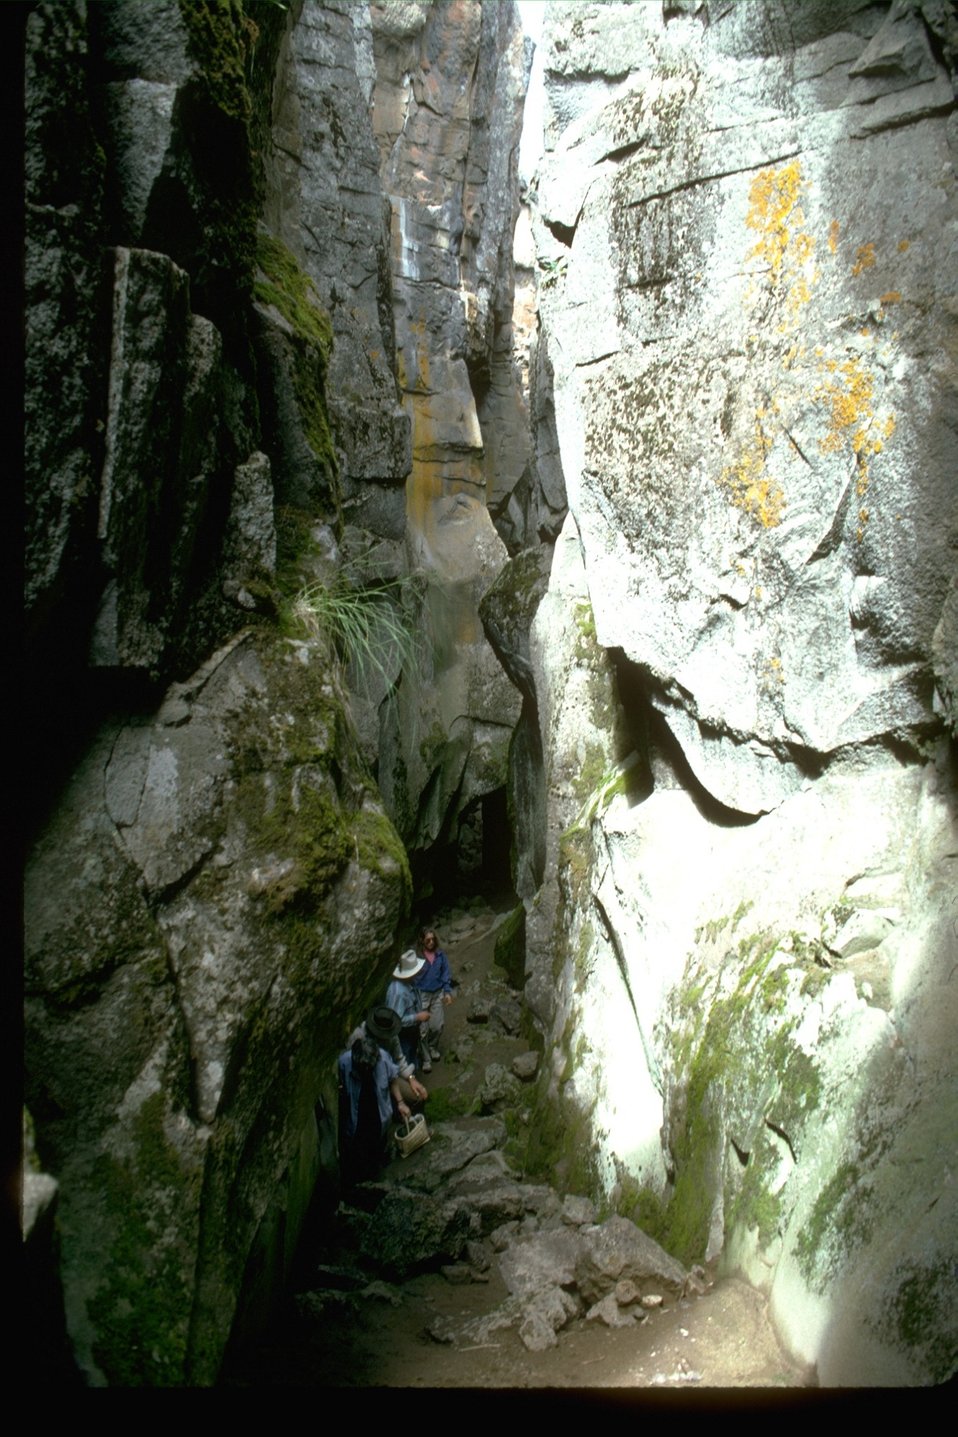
Hikers walking in large crack in the earth.